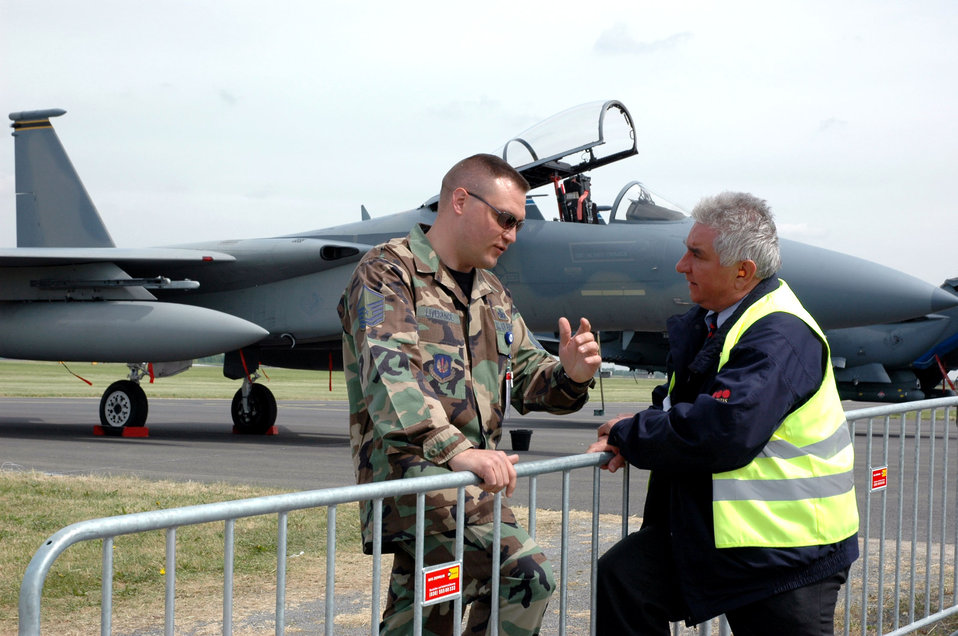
Behind-the-scenes work continues as air show set to begin

Master Sgt. Hank Liverance from Ramstein Air Base, Germany, discusses security with German airport security guard Hans Fedchenheuer on Monday, May 15, 2006 -- the day before the opening of the 2006 Berlin Air Show.